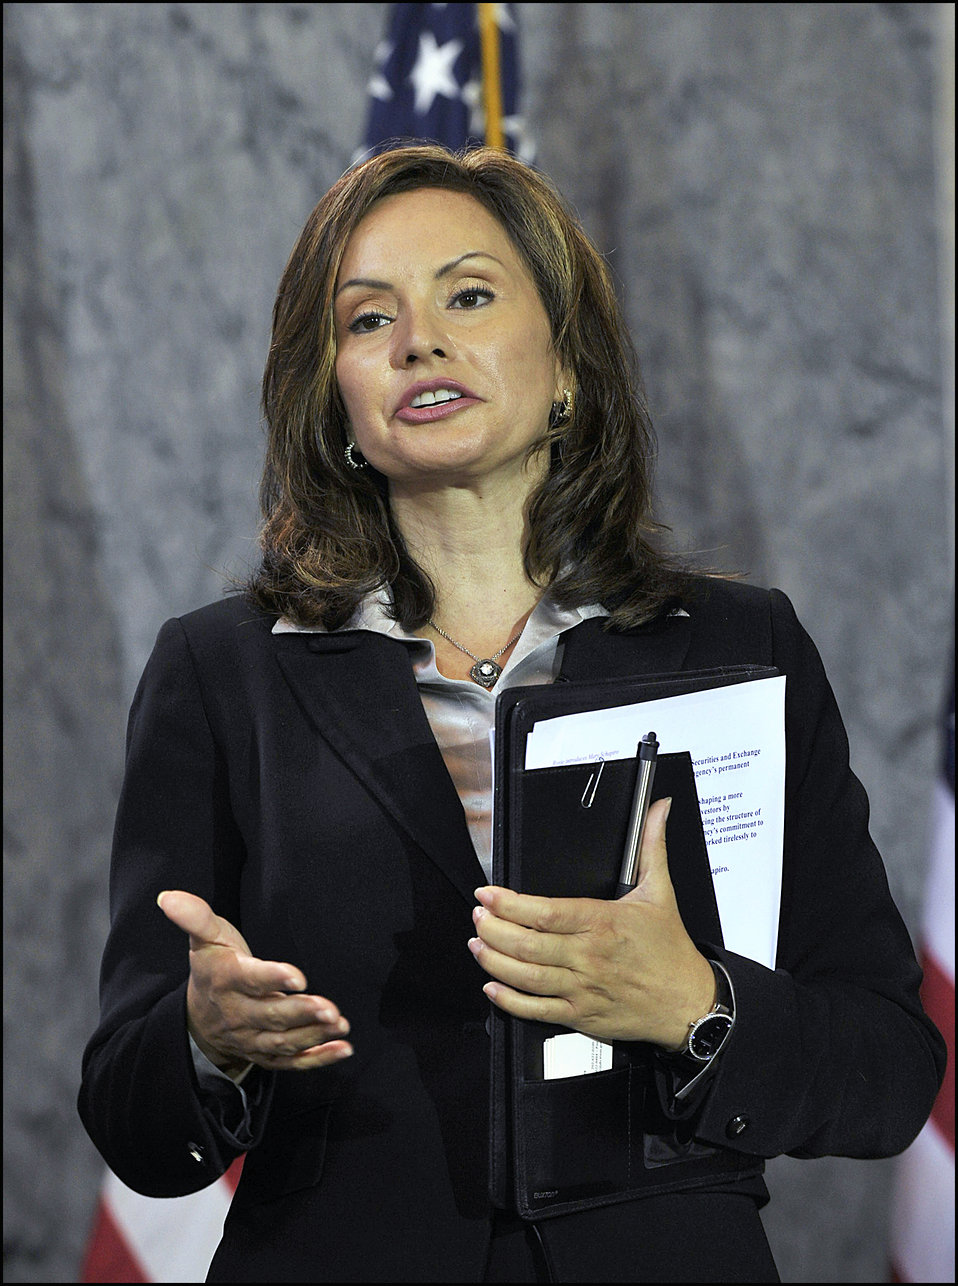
Women in Finance Investment Symposium

Treasurer of the United States Rosie Rios organized the 2nd annual Women in Finance Symposium with Assistant Secretary of the Treasury for Financial Markets Mary Miller (not pictured).